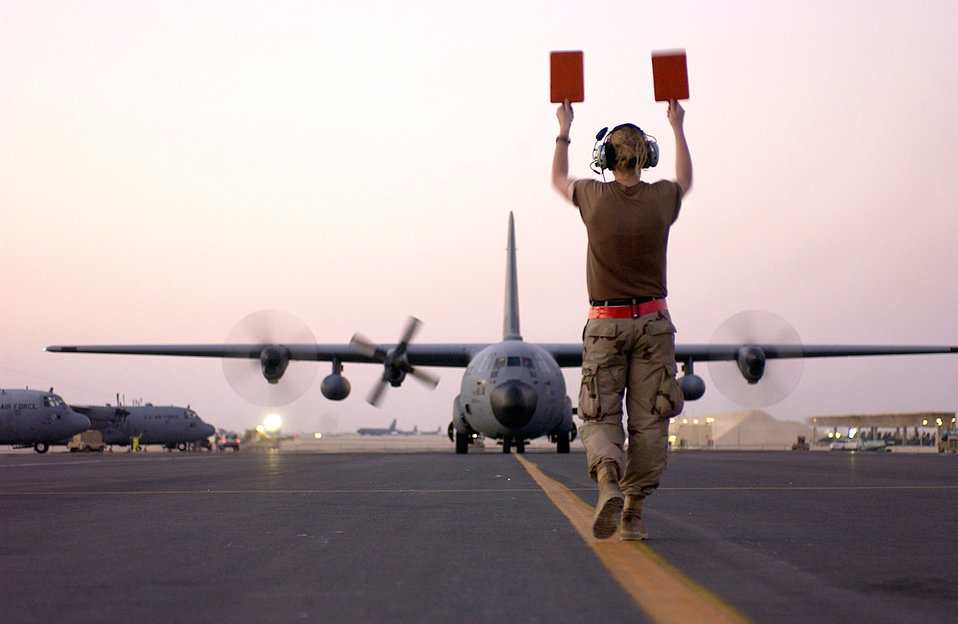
Right this way

SOUTHWEST ASIA -- Senior Airman Rebecca Merlin marshals a C-130 Hercules at a forward-deployed location. Merlin is a maintainer assigned to the 745th Expeditionary Airlift Squadron's aircraft maintenance unit. The squadron's airmen are supporting operations Enduring Freedom and Iraqi Freedom.